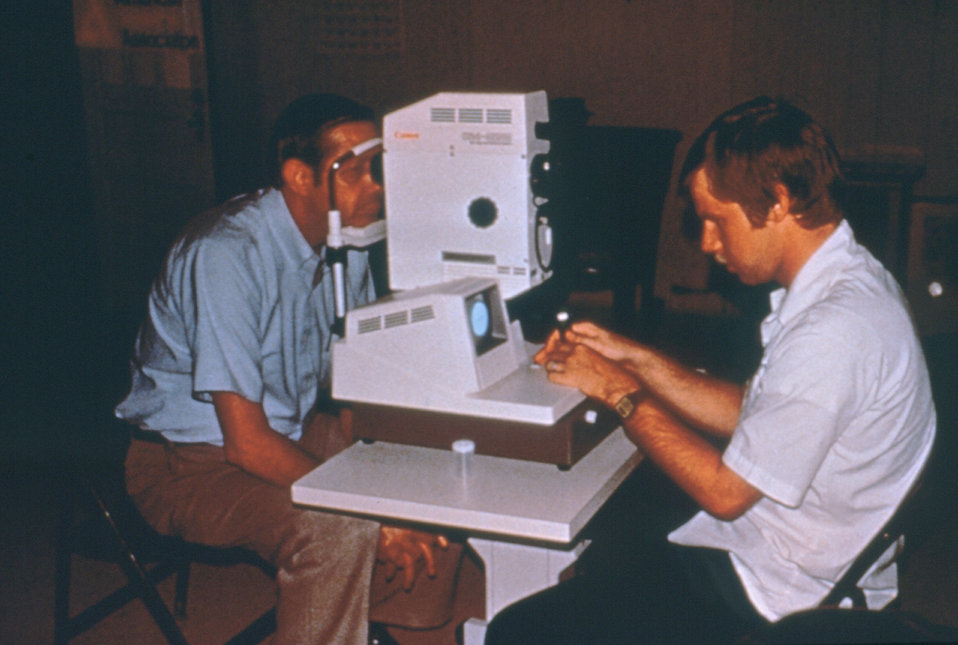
The physician on the right is conducting a diabetes eye exam on a patient afflicted with diabetes.